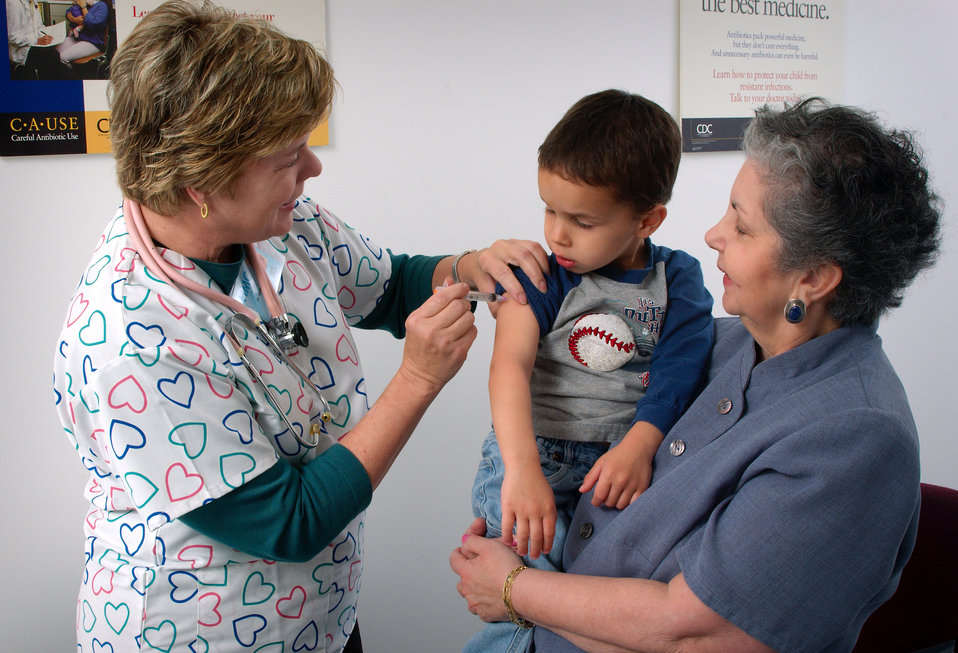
The 3-year old boy shown in this 2006 image, as well as PHIL 9303 and 9304, was receiving an immunization injection in his right shoulder.